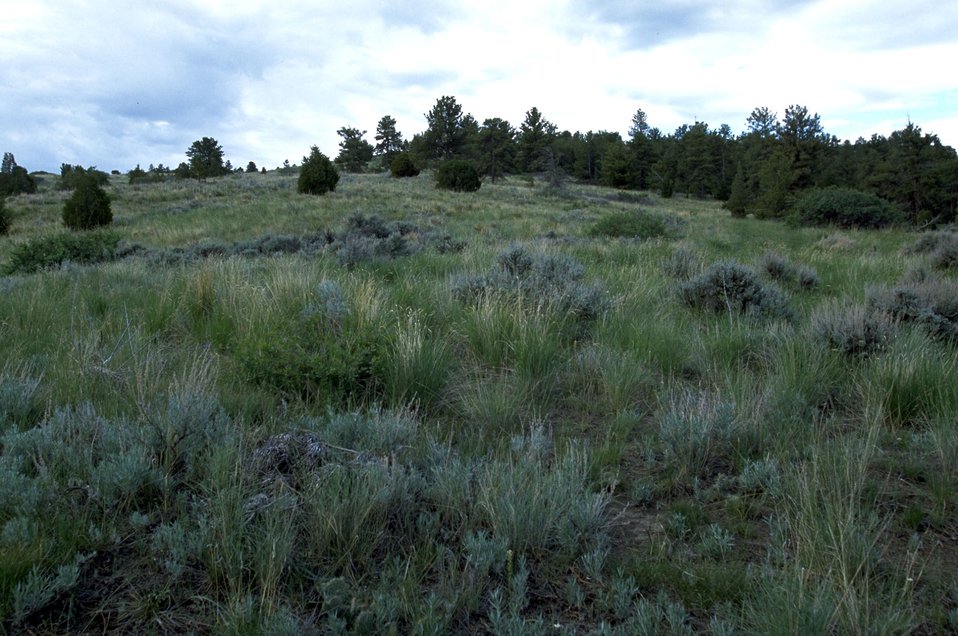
Sagebrush and ponderosa pine above the rimrocks in the Four Dances Natural Area